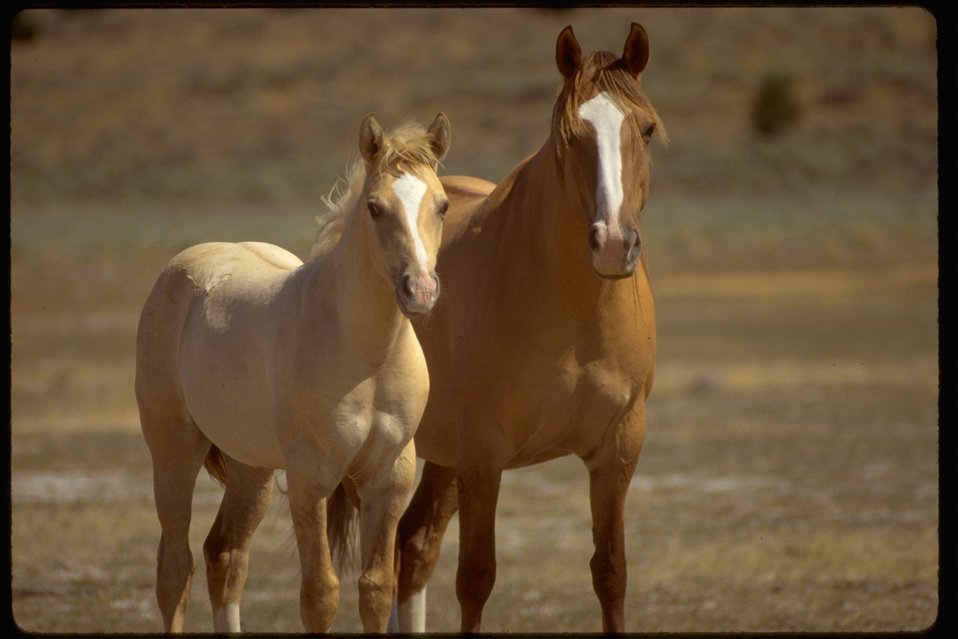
Palomino Buttes Wild Horses on the range, west of Burns, Oregon.